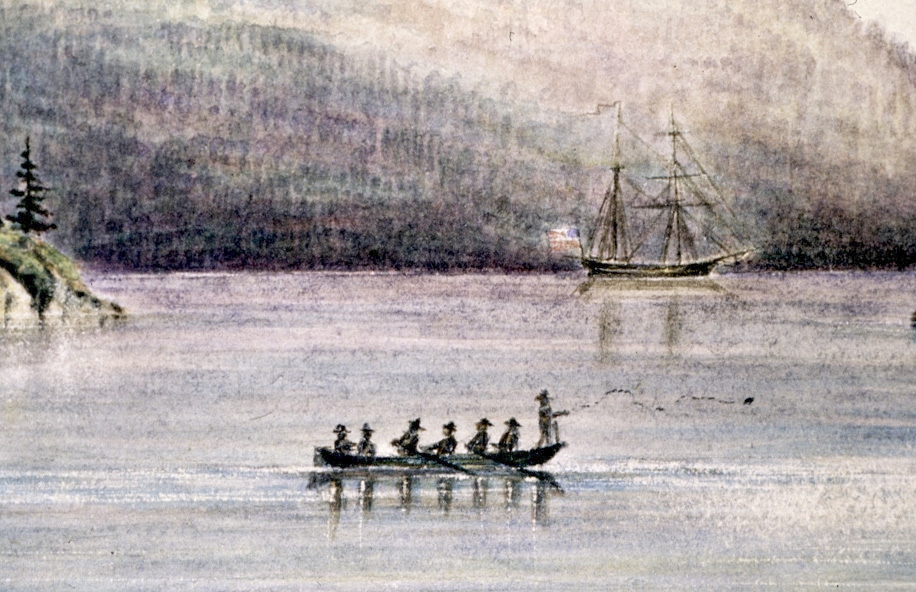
Sounding party off USCS Brig FAUNTLEROY. 1857-Earliest picture of Coast Survey sounding operations. Watercolor by James Madison Alden, nephew of Lieutenant CommandingJames Alden.